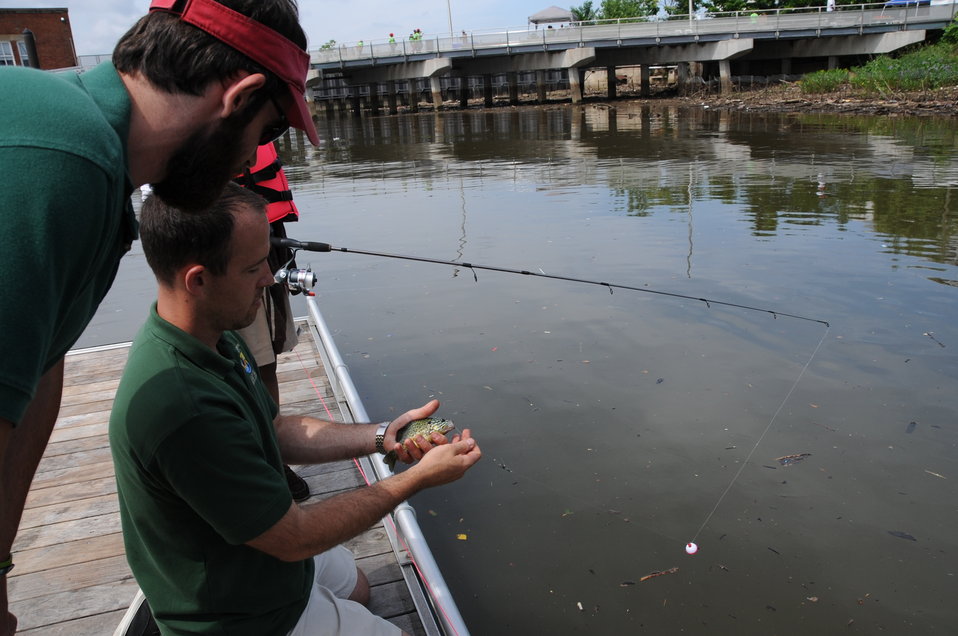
2013 National Fishing and Boating Week

Local students prepare to enjoy fishing at the annual kick-off of National Fishing and Boating Week on the Anacostia River in Washington D.C.